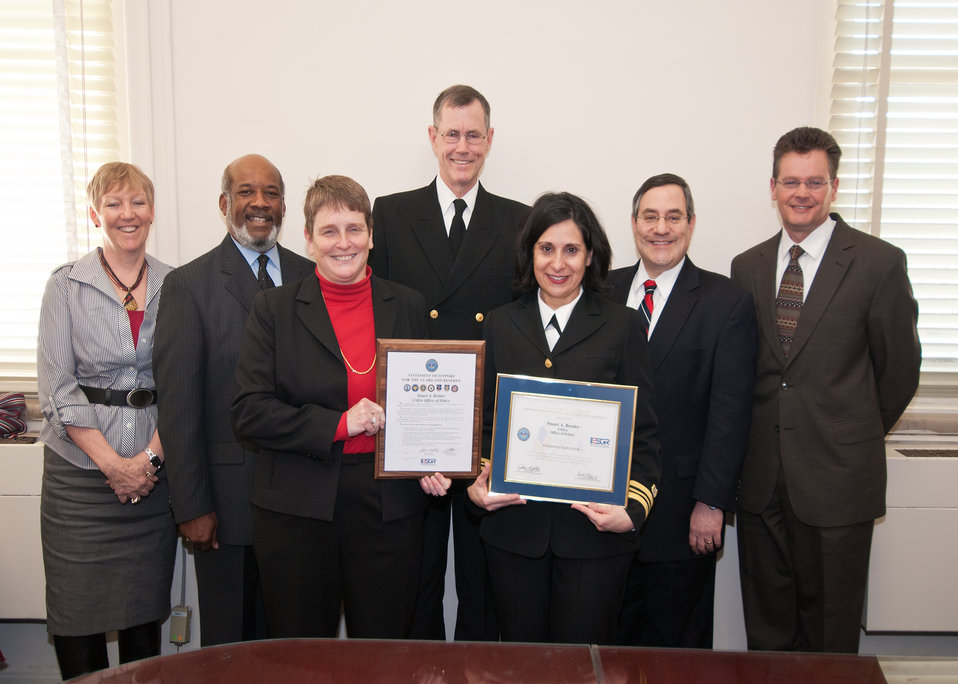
From left: Karen Messmore, Director, United States Department of Agriculture, Office of Human Resources Management, Lewis Williams, District of Columbia Committee for Employer Support of the Guard and Reserve (ESGR), Robin Heard, Deputy Assistant Secretary for Administration, United States Department of Agriculture, Captain Mike Edwards, Navy Reserve, United States Department of Agriculture Office of Ethics, Lieutenant Commander Lorraine Luciano, JAGC, Navy Reserve, United States Department of Agriculture Branch Chief, Forestry Branch, Office of Ethics, Stuart Bender, Director, United States Department of Agriculture Office of Ethics, Office of Human Resources Management, Mark Thomas, Human Resources Specialist, United States Department of Agriculture, Office of Human Resources Management. Bender received the Patriot Award from Lewis Williams, District of Columbia Committee for Employer Support of the Guard and Reserve (ESGR) on behalf of the Department of Defense. The award recognizes the outstanding support of Mr. Bender to the Reserve Component of the United States Military Forces.